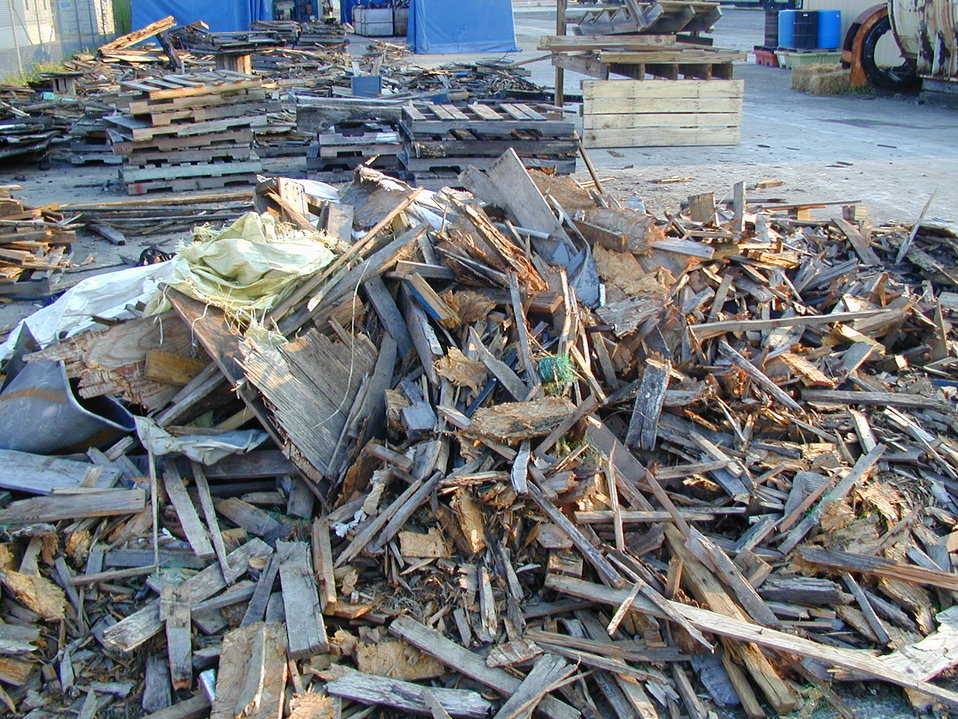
‘Project Wipeout’ Helps Clean Up Oak Ridge

A debris pile in an East Tennessee Technology Park scrap yard before cleanup.

Project Wipeout is an effort to locate, identify, and remove legacy waste scattered throughout the site.

In August 2011, EM’s contractor in Oak Ridge, URS | CH2M Oak Ridge (UCOR), began using available workers and other resources for the mission to eliminate primarily non-radioactive construction debris at locations across the site. Some of these areas are small with a few pallets and recyclable metal. Others cover thousands of square feet in debris. All of them require active surveillance and maintenance to account for the material and ensure they are stable and secure.

Although personnel and resources are fully deployed most of the time, the initiative maximizes efficiency during occasional slower periods between peak work demands.